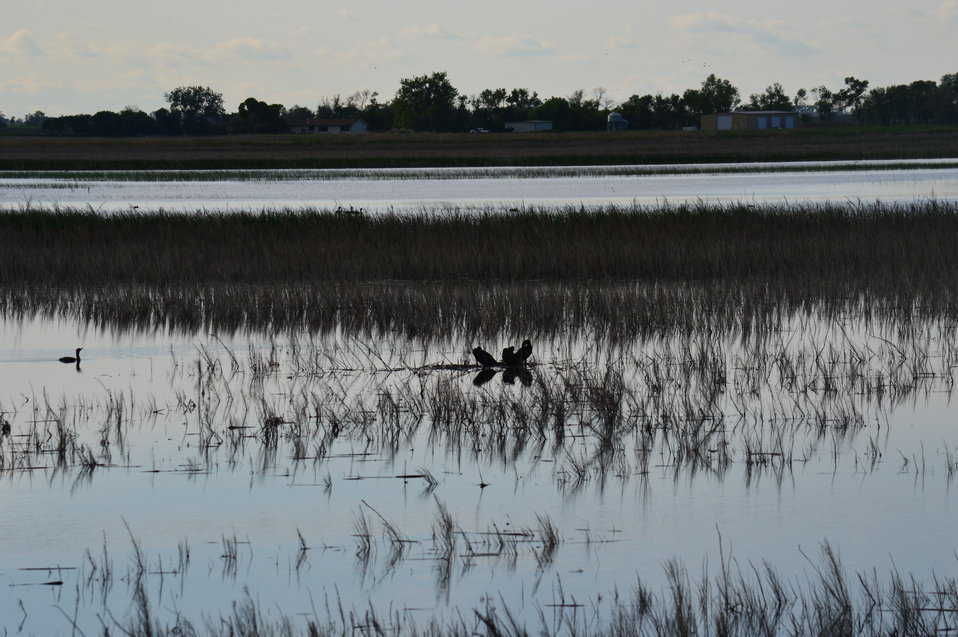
Waterfowl at Sand Lake

Scenery and wildlife at Sand Lake National Wildlife Refuge in South Dakota